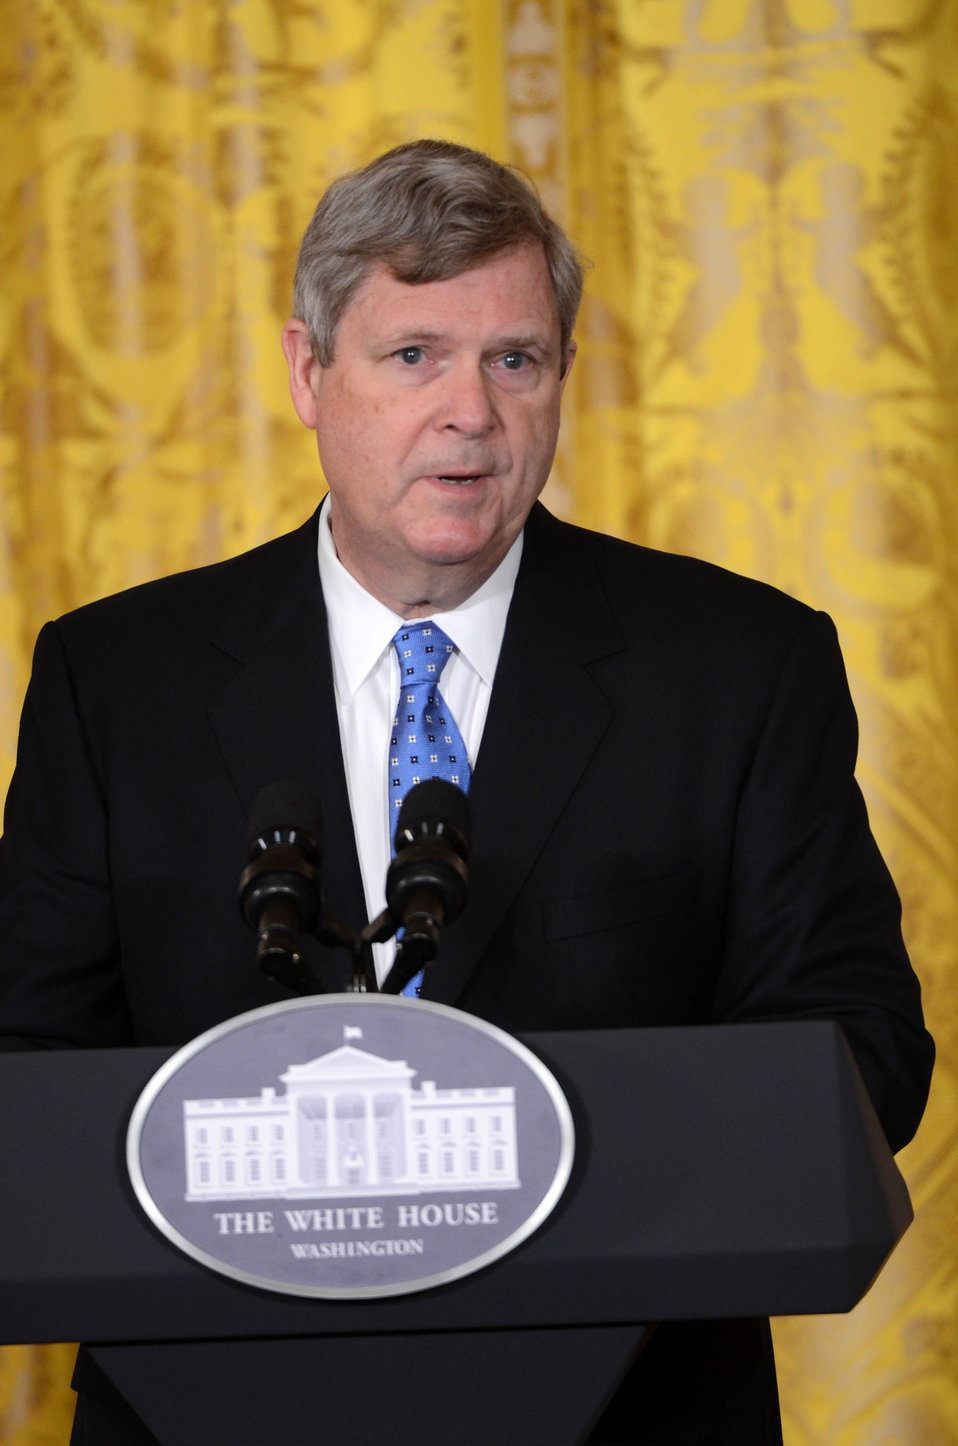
Agriculture Secretary Tom Vilsack announces proposed guidelines for comprehensive school wellness policies and the launching of a new 'School Nutrition Environment and Wellness Resources' website, which includes sample wellness policy language for school districts and a dedicated page of resources for food marketing practices on the school campus in the East Room of the White House in Washington, D.C. on Tuesday, Feb. 25, 2014. The bipartisan Healthy, Hunger-Free Kids Act of 2010 mandated that the U.S. Department of Agriculture (USDA) set guidelines for what needed to be included in local school wellness policies in areas such as setting goals for nutrition education and physical activity, informing parents about content of the policy and implementation, and periodically assessing progress and sharing updates as appropriate. The proposed guidelines would ensure that foods and beverages marketed to children in schools are consistent with the recently released Smart Snacks in School standards and ensuring that unhealthy food is not marketed to children is one of the First Lady's top priorities.